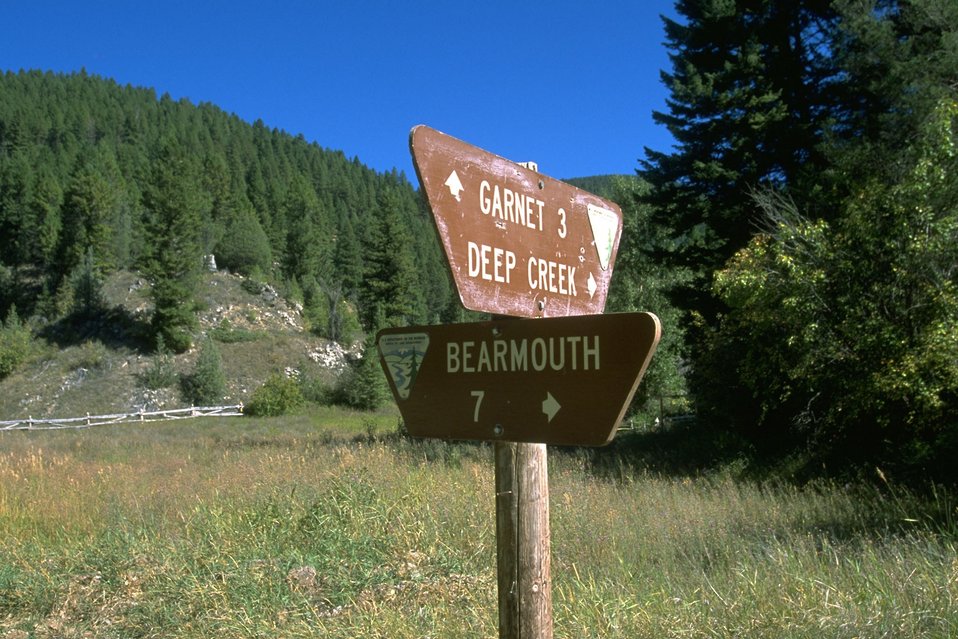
Bear Gulch-Deep Creek Junction